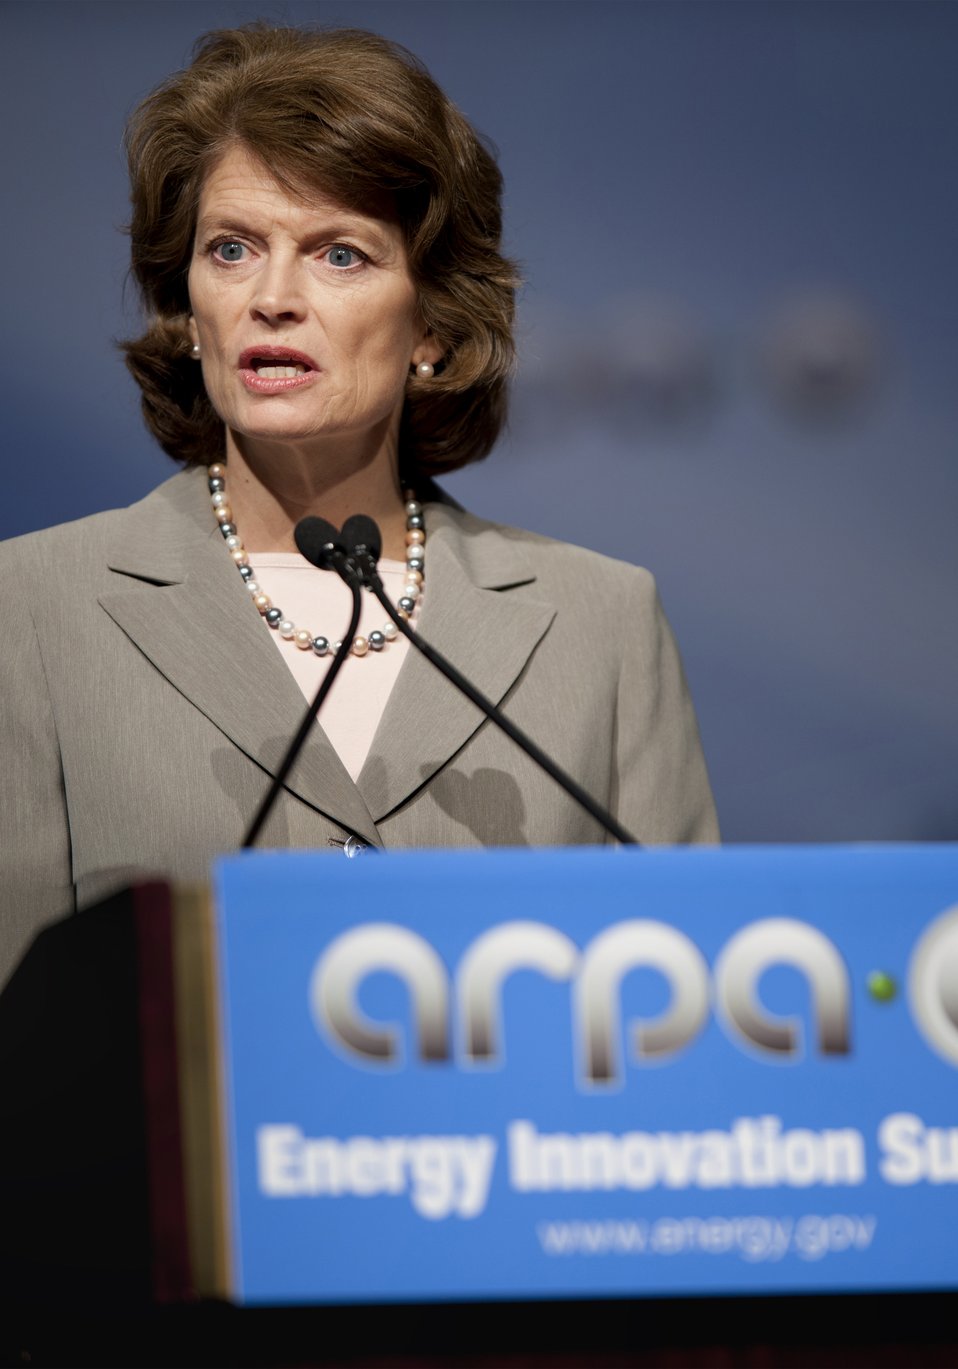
ARPA-E Energy Innovation Summit 2011, 34 of 83

Senator Lisa Murkowski (I-AK)